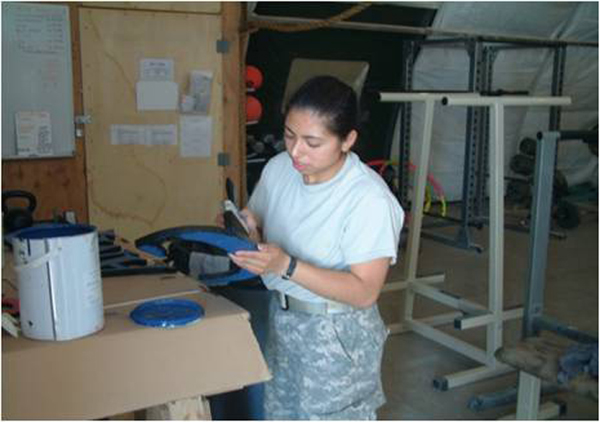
Group members dedicate camp to fallen hero

Army Spc. Marisol Munoz paints a piece of a sign to be put on display naming the 738th Air Expeditionary Advisory Group